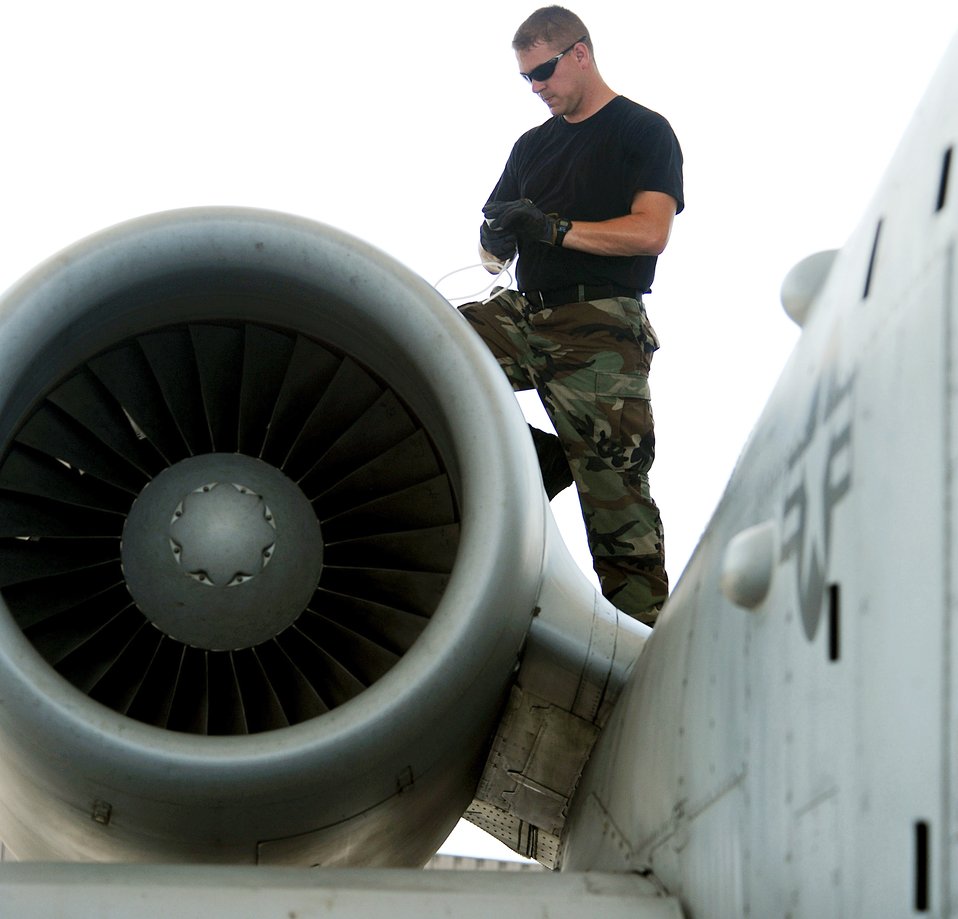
Everything checks out

Staff Sgt. Justin Stone performs an inspection on an A-10 Thunderbolt II Aug. 4 during an operational readiness exercise at Moody Air Force Base, Ga. Sergeant Stone is a crew chief assigned to the 23rd Aircraft Maintenance Squadron.